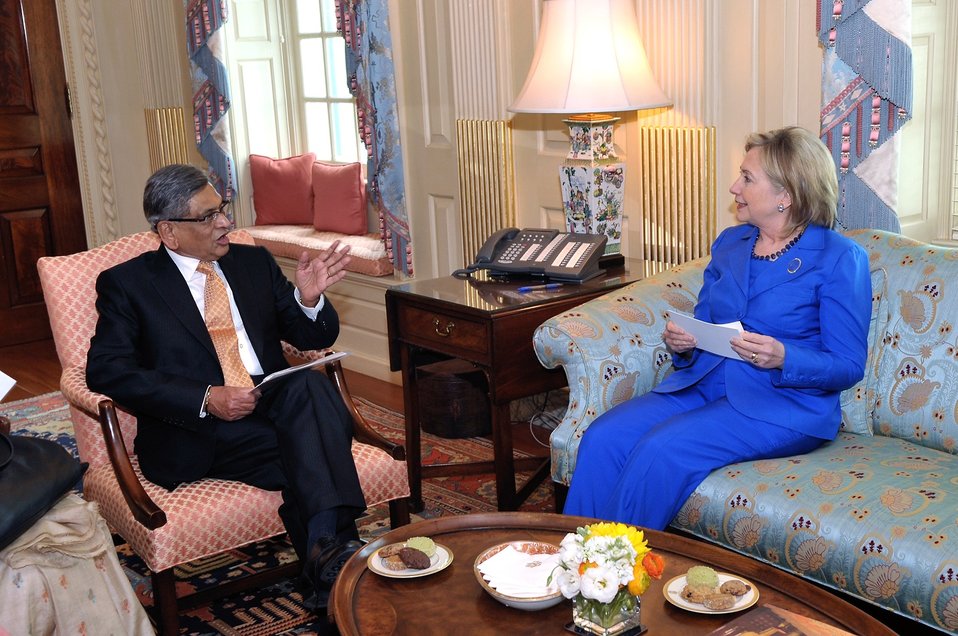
Secretary Clinton Hosts Bilateral Meeting With Indian Minister of External Affairs S.M. Krishna

U.S. Secretary of State Hillary Rodham Clinton hosts a bilateral meeting with Indian Minister of External Affairs S.M. Krishna at the U.S. Department of State in Washington, D.C., on June 3, 2010.